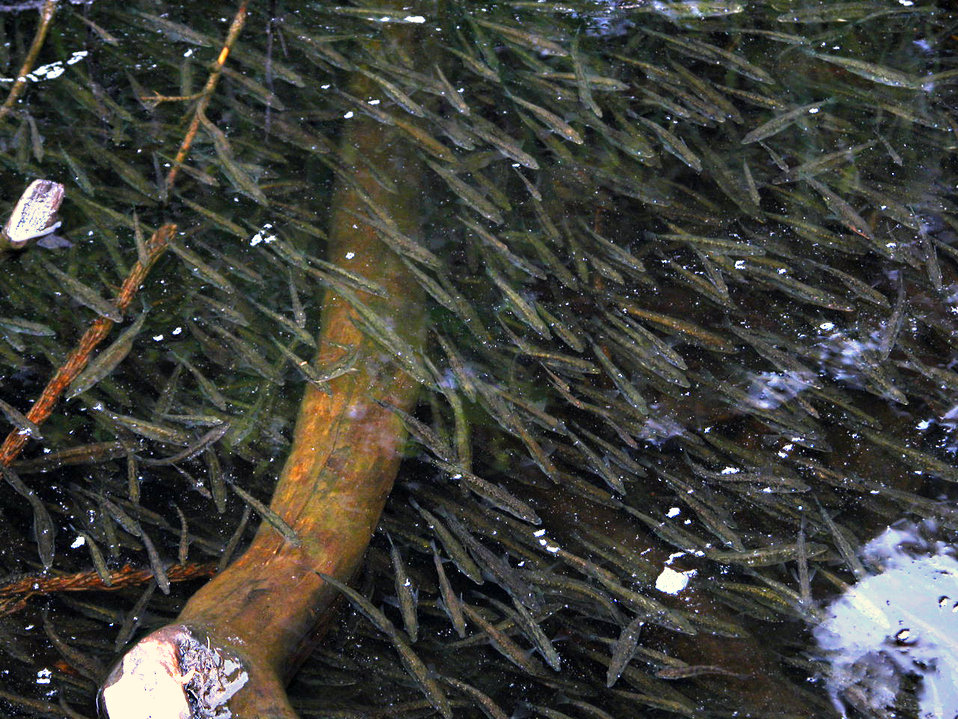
school of sticklebacks